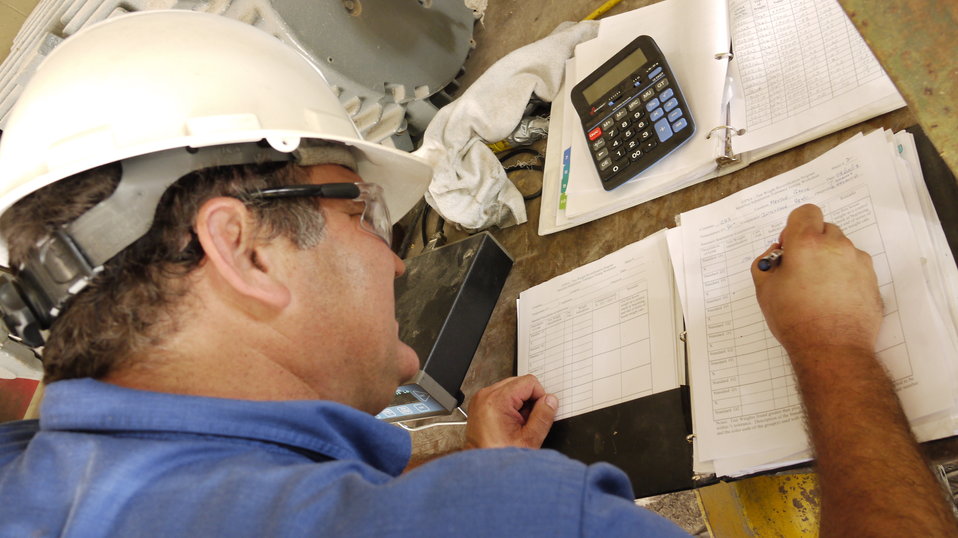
U.S. Department of Agriculture’s (USDA) Grain Inspection, Packers, and Stockyard Administration (GIPSA) industrial specialist Troy Kramer records results during calibration of the test weights at the grain elevator in Myrtle, LA on Aug. 6, 2013. USDA GIPSA provides official testing of Automatic Bulk Weighing (Hopper) scales used in official certification of grain weight.